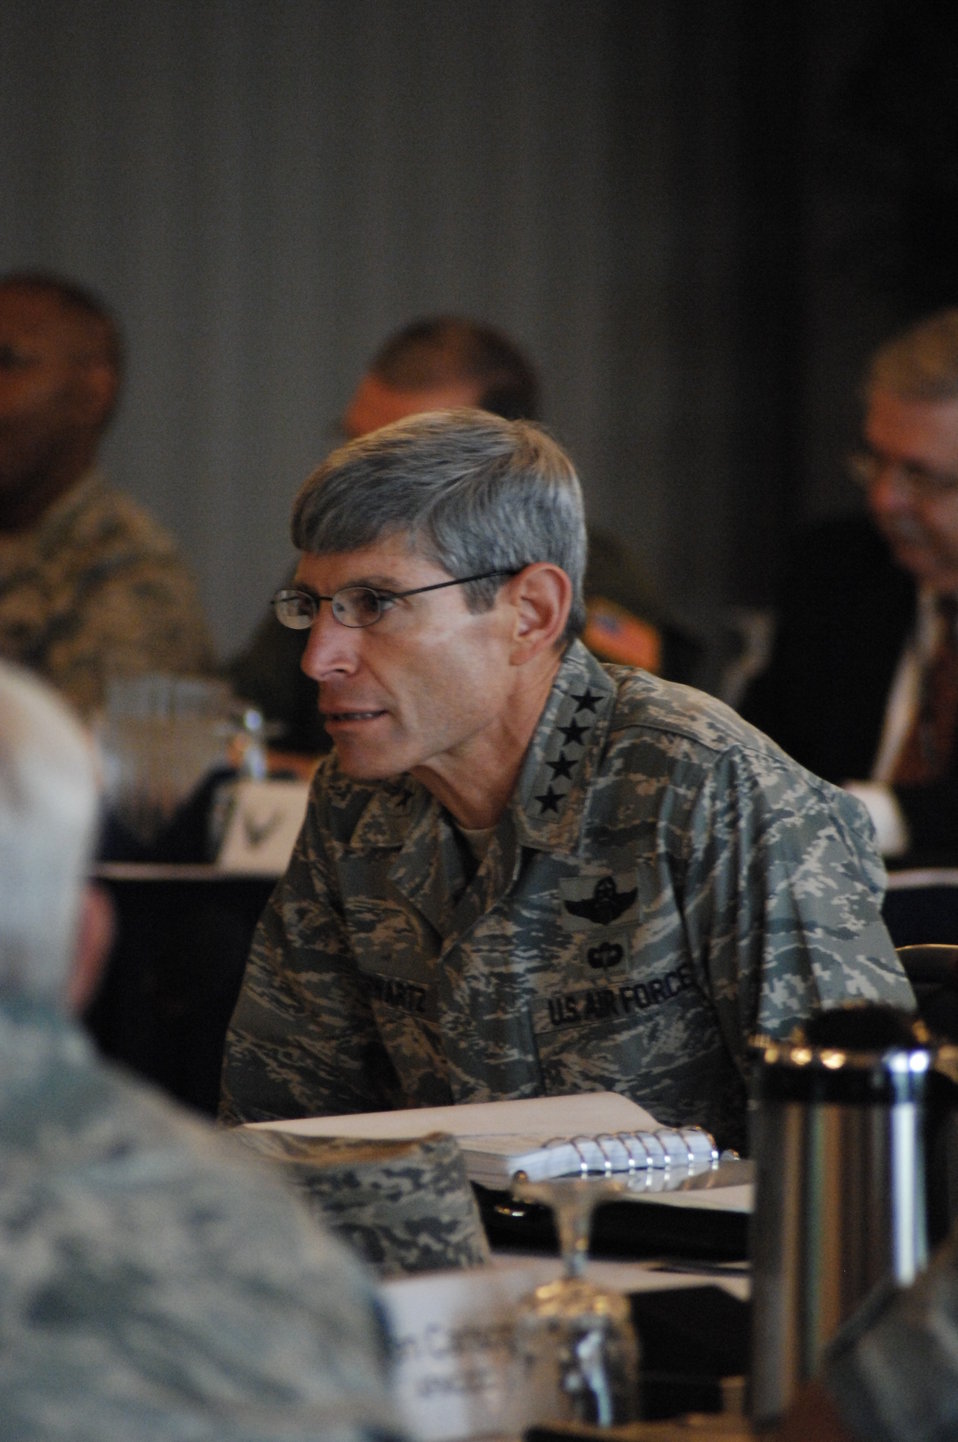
Senior leaders meet to discuss, decide way ahead for force

Air Force Chief of Staff Gen. Norton A. Schwartz listens to a briefer at the strategic summit with other senior Air Force leaders Aug. 27, at Bolling Air Force Base, D.C.